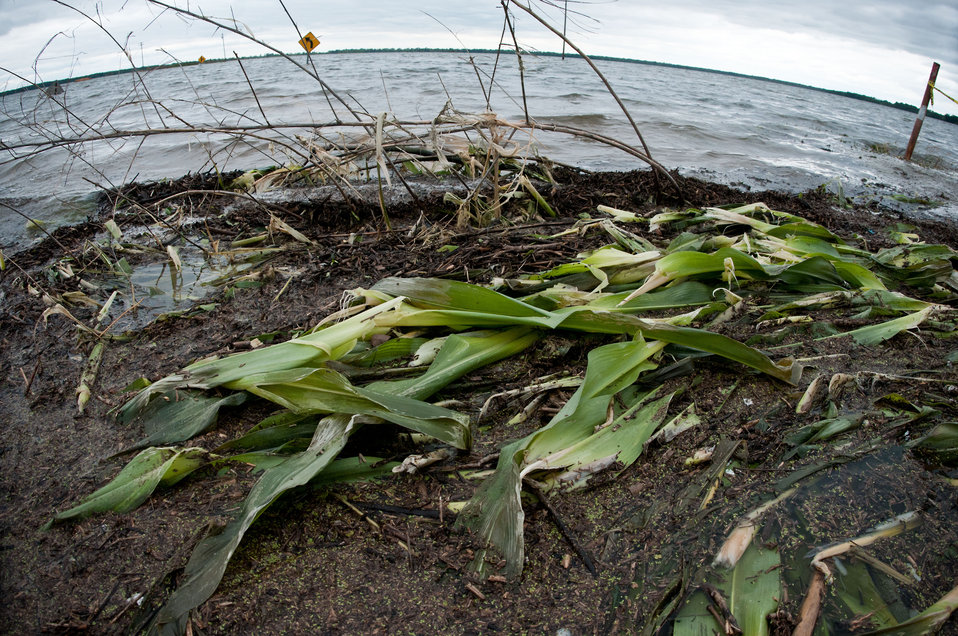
Mississippi River floodwaters have pushed into Yazoo River and into this corn field in Satartia, MS, on Monday, May 16. 2011. The community of 96 was evacuated and this clearing of approximately 4,000 acres were completely flooded. Wave action and decay has freed parts of corn stalks collecting along the new shoreline. The water saturated soil does not allow enough oxygen to the plant, by the time the water is expected to recede, the stalks will be dead. The wheat was harvested earlier two weeks earlier than scheduled from wet fields and will have to be dried before being used or sold. New media crews come and go throughout the day reporting from this bridge and roadway.